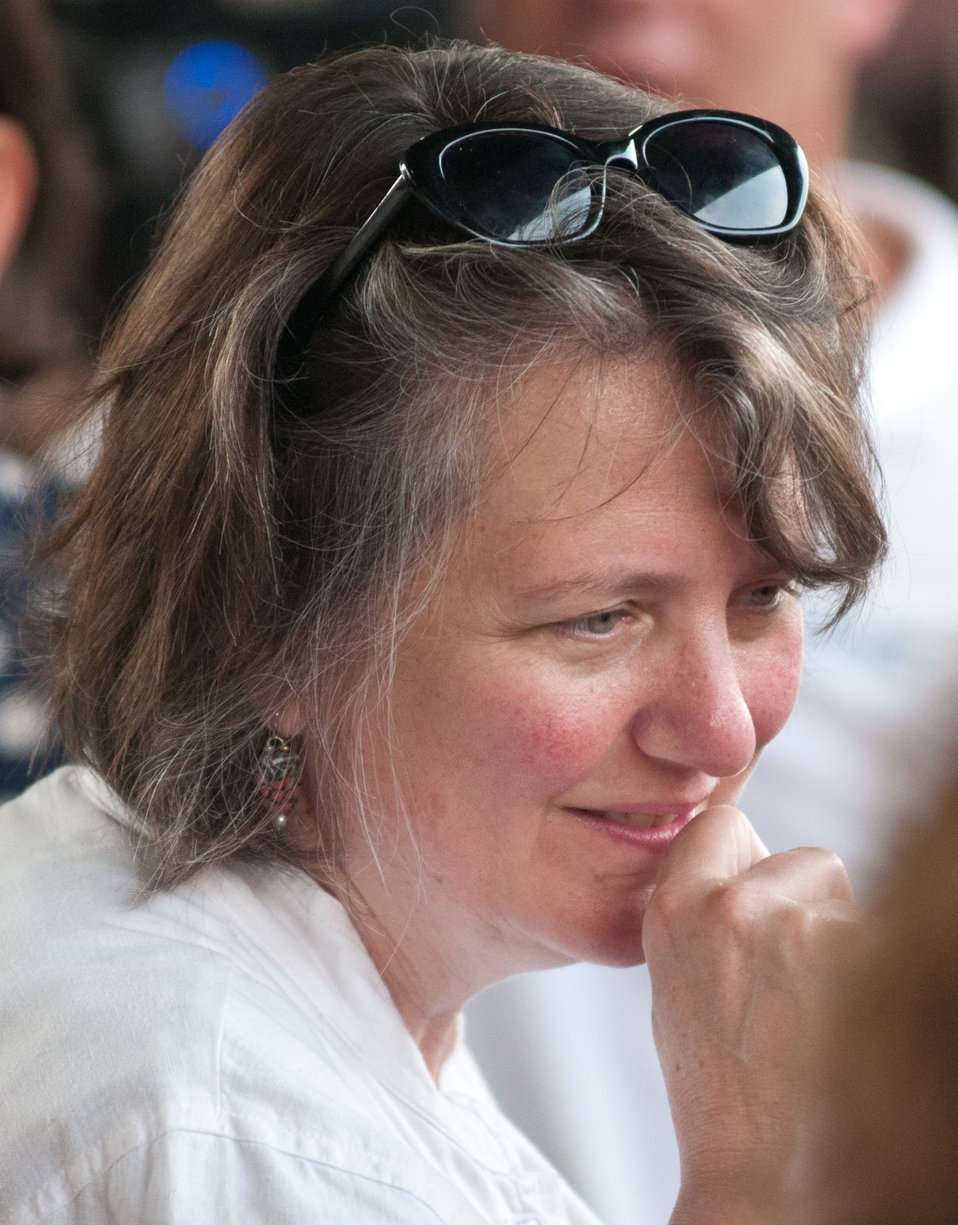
Agriculture Deputy Secretary Kathleen Merrigan considers one of her many purchases at the Baltimore’s Farmers Market and Bazaar in Baltimore, MD on Sunday, July 8, 2012. Today marked the new wireless capability that supports portable terminal use to accept the U.S. Department of Agriculture’s (USDA) Food Nutrition Service’s (FNS) Supplemental Nutrition Assistance Program (SNAP) Electronic Benefits Transfer (EBT) cards, Baltimore Bucks, and debit cards. “SNAP participation at farmers markets helps provide fresh fruit and vegetables to families and expands the customer base for local farmers in the Delmarva area, a win-win for agriculture and local communities,” said Agriculture Deputy Secretary Kathleen Merrigan. “And when we couple SNAP access at farmers' markets with strategies like education, cooking demonstrations, and community support in the Baltimore area, consumption of healthy foods has potential to grow even more.”